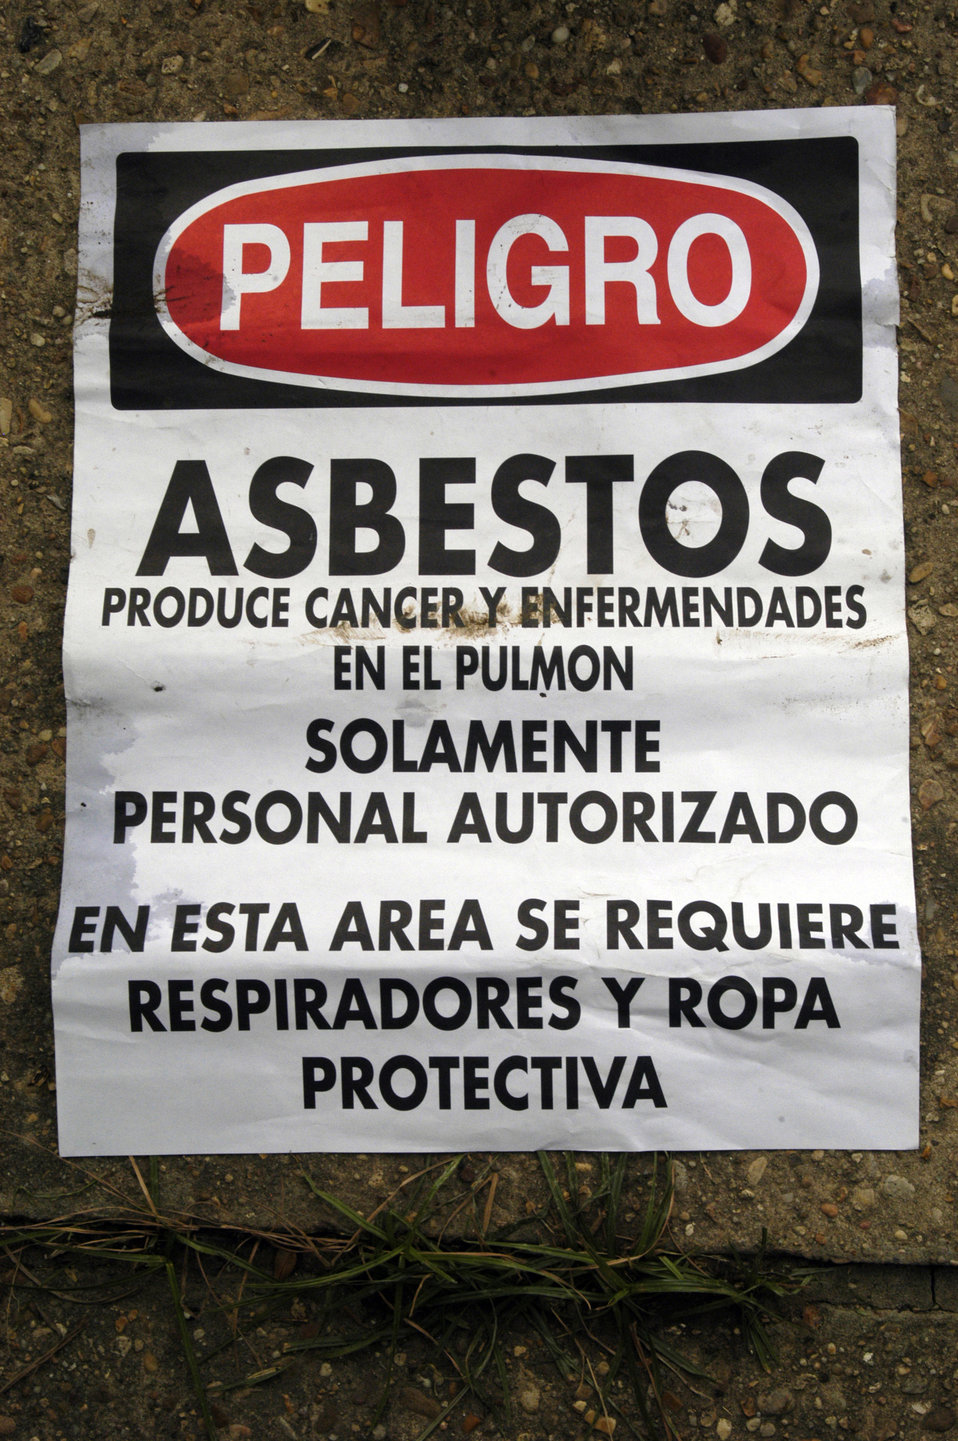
Many of the older homes and buildings in the New Orleans, LA, locale that were destroyed by Hurricane Katrina contained asbestos material (i.e. asbestos roofing tiles, transite siding, insulation, floor tiles, and popcorn ceilings). The U.S. Army Corps of Engineers (USACE) was mandated to follow strict environmental protocols in the demolition of these homes that were designated Regulated Asbestos Containing Material (RACM) demolitions. Warning signs and tape were used to designate the “hot zone” and all non-essential personnel were required to stay on the safe side of the marked area.